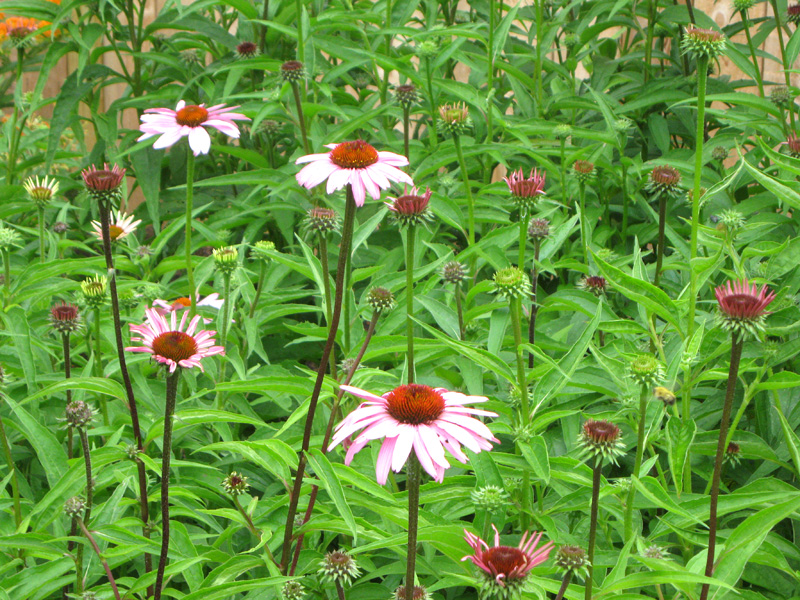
Coneflowers grow in a garden in Maryland.